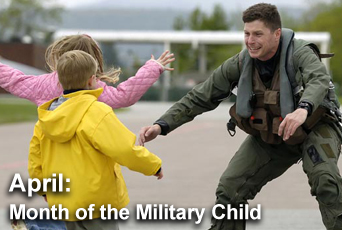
Air Force celebrates Month of the Military Child

April is celebrated as the Month of the Military Child.